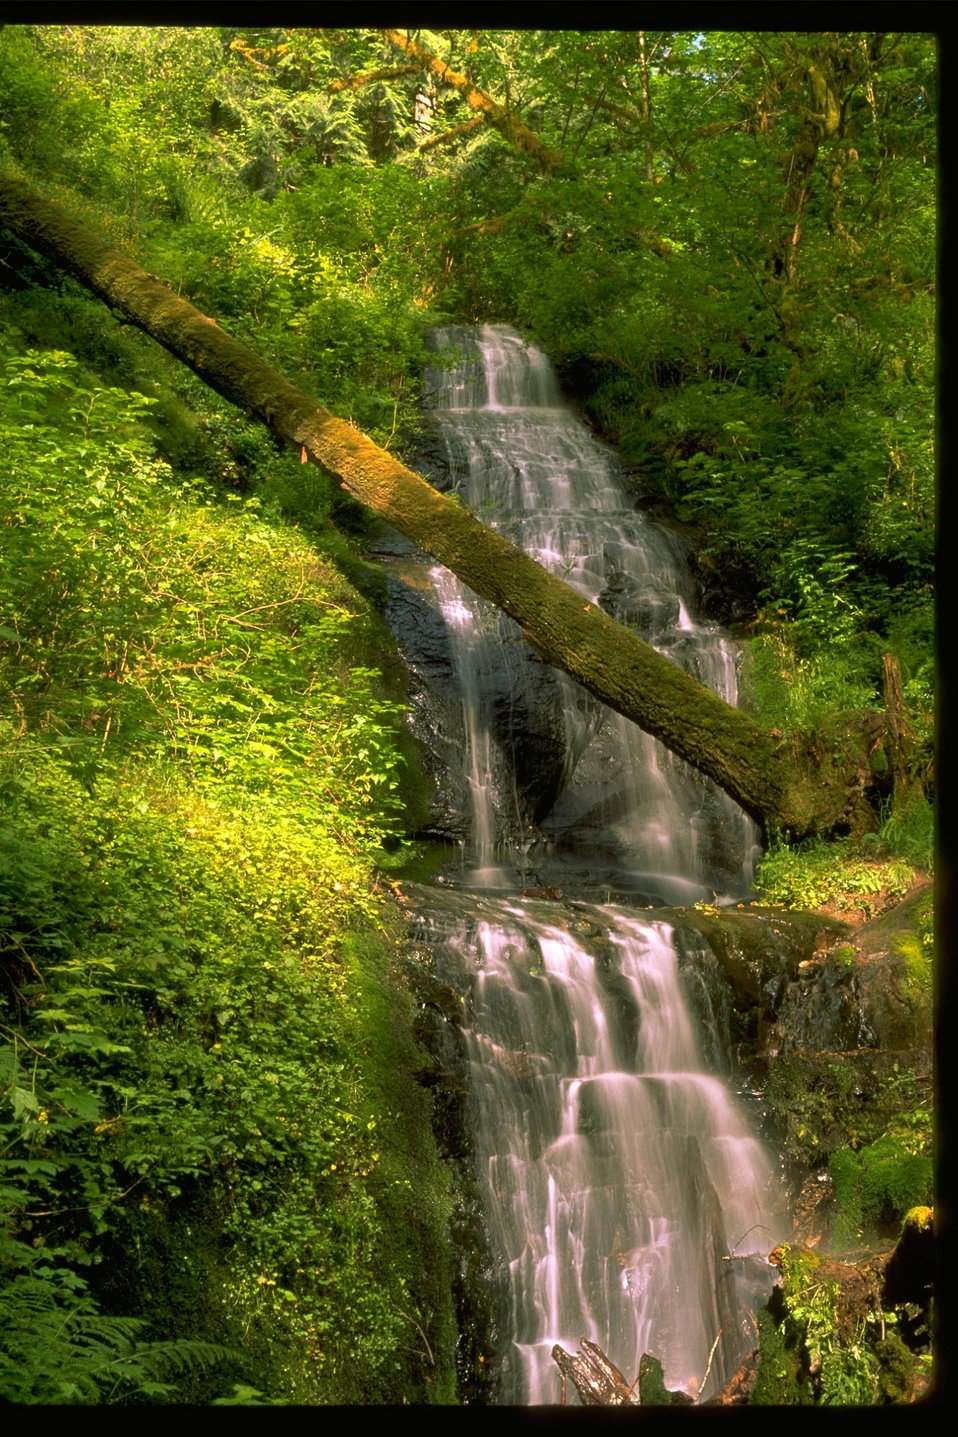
Loon Lake Waterfall.